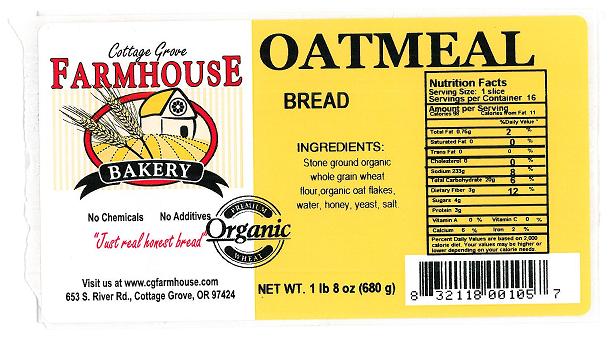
RECALLED - Bread

April 1, 2011 - Product Recall - Cottage Grove Farmhouse Bakery Issues Allergy Alert On Undeclared Pasteurized Egg White In Breads.